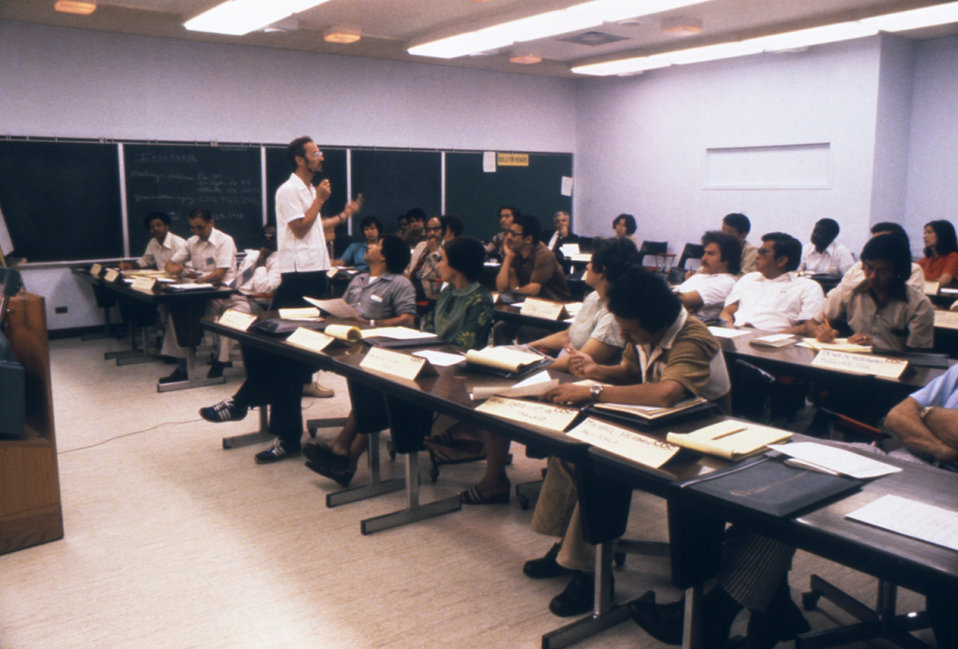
This classroom photograph was taken during a 1970s International Epidemiologists and Health Administrators course.